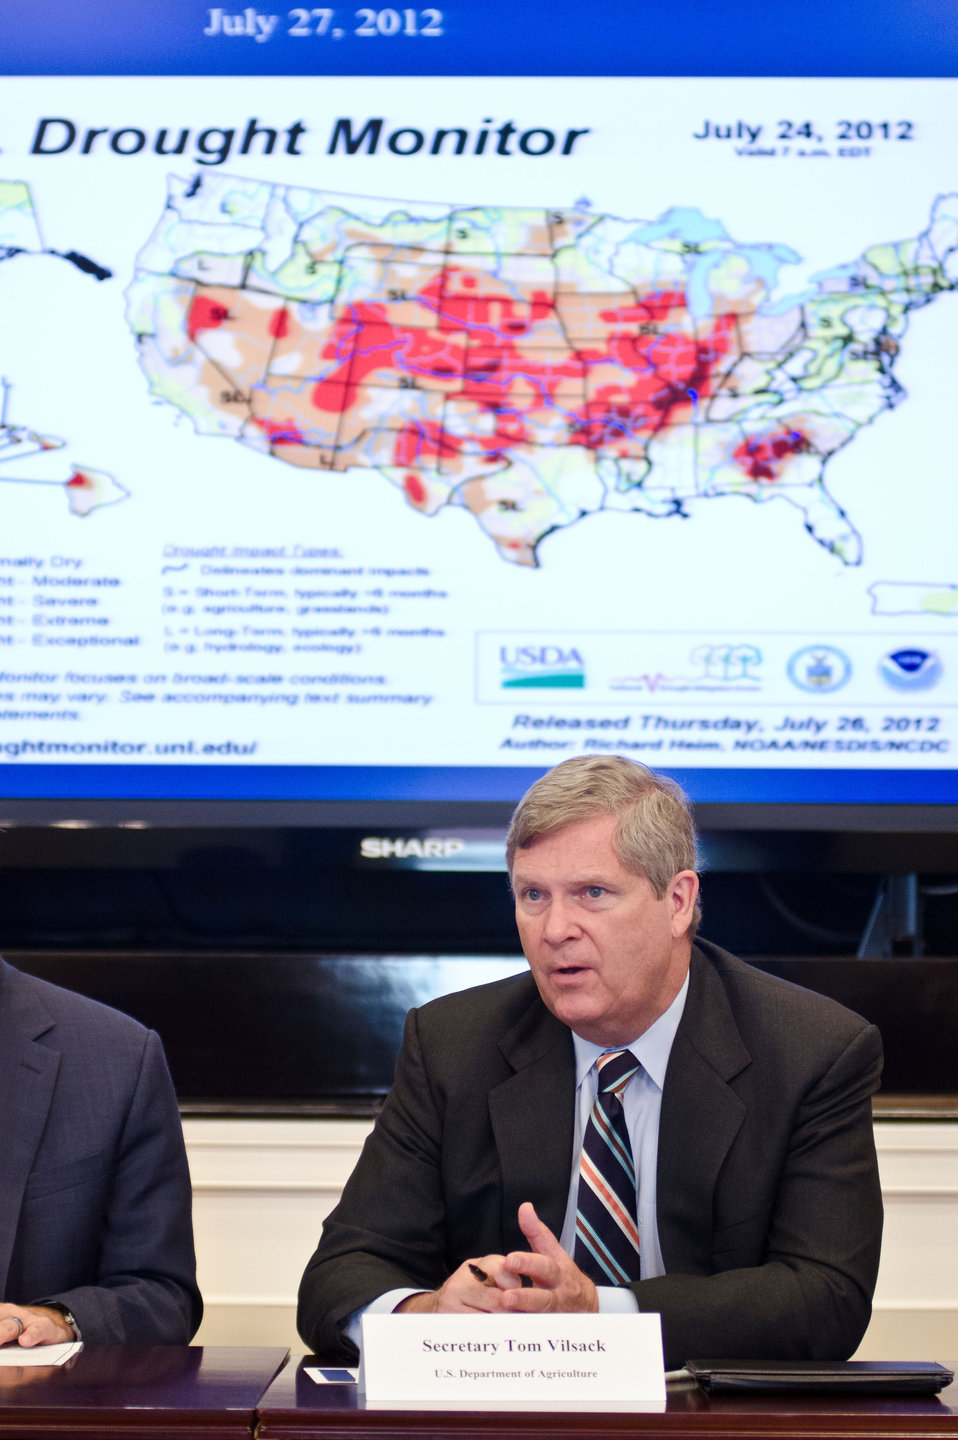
Agriculture Secretary Tom Vilsack chaired a meeting of the White House Rural Council at the Executive Office Building in Washington, D.C. on Friday, July 27, 2012 to update members and stakeholders on the Administration response to the drought and explore ways to assist American farmers and ranchers suffering in its affects. Following President Obama’s instructions of using existing programs to support struggling farmers and ranchers the U.S. Department of Agriculture (USDA) has implemented several processes to assist American farmers and ranchers. USDA has streamlined drought disaster declarations directly from Drought Monitor data, allowed nearly 30 million acres under the Conservation Reserve Program (CRP) to be used for emergency haying or grazing, lowered payment reduction for CRP lands that qualify for emergency haying and grazing in 2012, from 25% to 10%, allowed producers to modify current Environmental Quality Incentives Program (EQIP) contracts to allow for grazing, livestock watering and other conservation activities to address drought conditions, and has authorized haying and grazing of Wetlands Reserve Program (WRP) easement area in drought-affected areas where haying and grazing is consistent with conservation of wildlife habitat and wetlands, and reduced the interest rate for Farm Service Agency (FSA) Emergency loans from 3.75% to 2.25%.